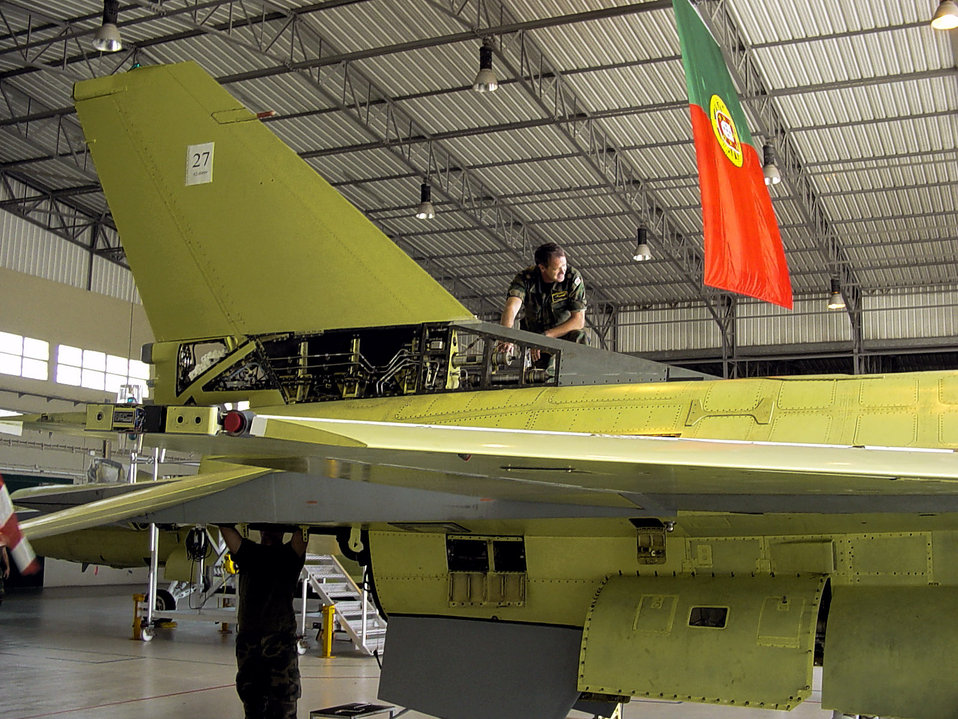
Lean Initiatives in the Portuguese air force

Portuguese air force sergeant Jose Pereira (top), the Dock 4 floor supervisor at Air Base 5 in Monte Real, Portugal, works on an F-16 fighter to ready it for a test flight after going through a mid-life upgrade process.